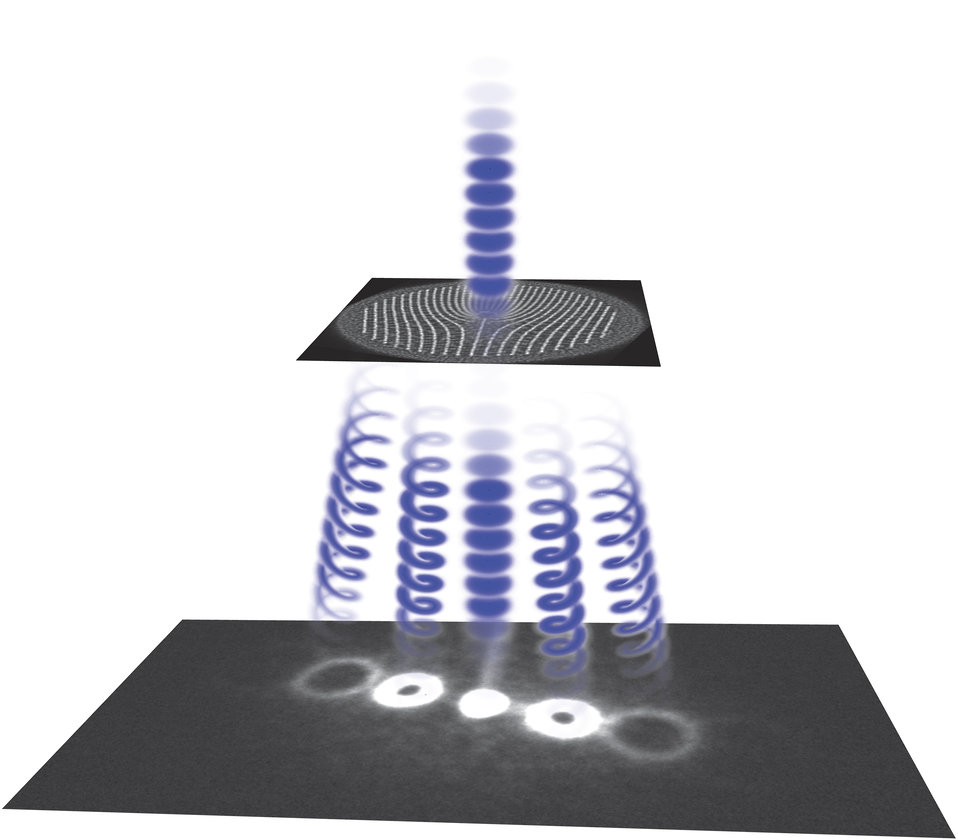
NIST Puts a New Twist on the Electron Beam

NIST researchers twisted the flat electron wavefronts into a fan of helices using a very thin film with a 5-micron-diameter pattern of nanoscale slits, which combines the wavefronts to create spiral forms similar to a pasta maker extruding rotini. This method produces several electron beams fanning out in different directions, with each beam made of electrons that orbit around the direction of the beam.